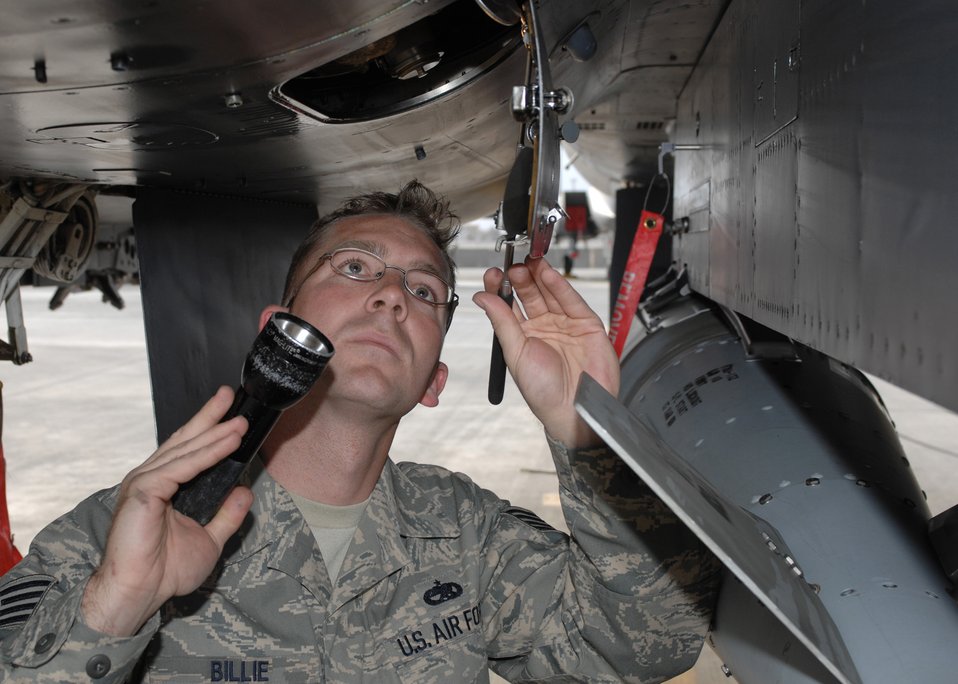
Instinctive action by Bagram Airman prevents catastrophe

Staff Sgt. Jonathan Billie inspects the airframe mounted accessories drive on an F-15E Strike Eagle March 11 at Bagram Air Base, Afghanistan. Sergeant Billie, an F-15E crew chief, is assigned to 335th Expeditionary Aircraft Maintenance Unit and is deployed from Seymour Johnson Air Force Base, N.C.